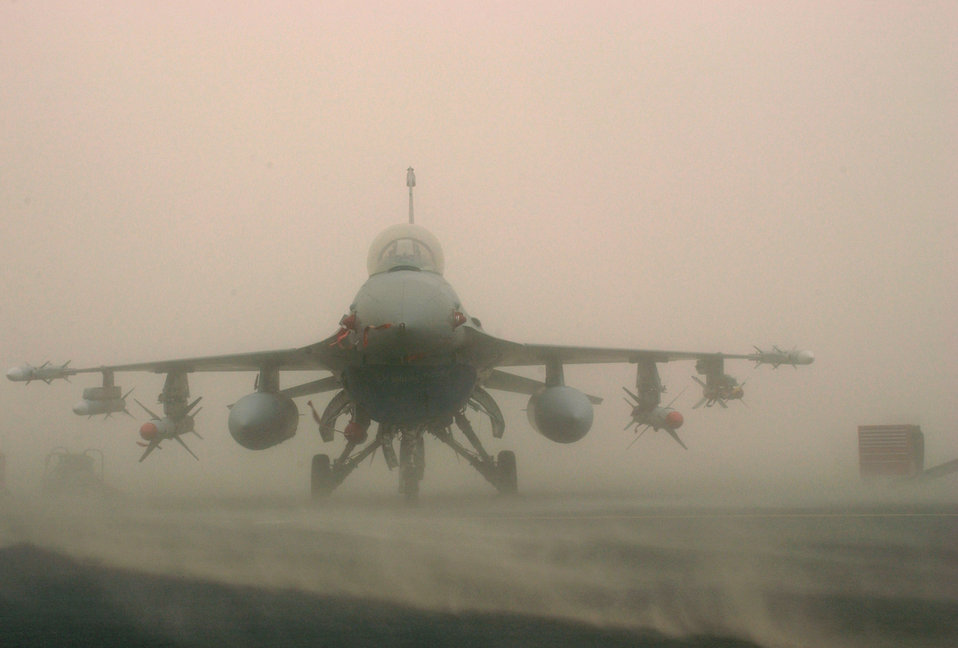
Sandstorm

OPERATION IRAQI FREEDOM -- An F-16CJ sits on the ramp during a severe sand and wind storm at a forward-deployed location March 26. Conditions make it almost impossible to work outside and often make work difficult for airmen in the region. Despite the challenge, aircraft from the base still flew combat sorties in support of Operation Iraqi Freedom. Operation Iraqi Freedom is the multi-national coalition effort to liberate the Iraqi people, eliminate Iraqi's weapons of mass destruction and end the regime of Saddam Hussein.